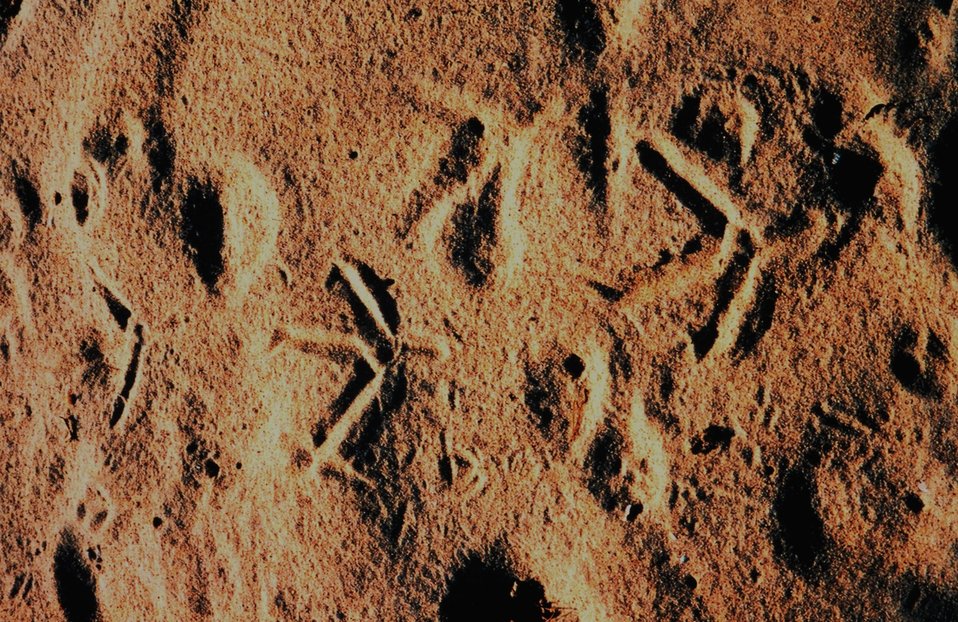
Footprints in the sand. A Great Blue Heron has left its tracks here along the river. Compare the sand texture in this picture to the following image.